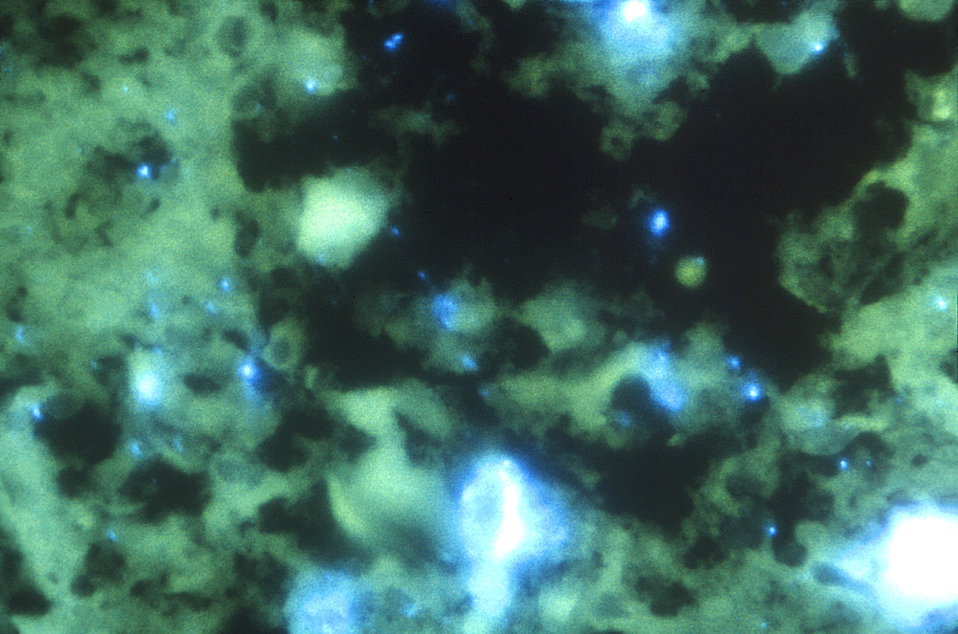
Magnified 562X, this photomicrograph, stained using the fluorescent antibody (FA) technique, revealed elements of a Zygomycetes infection within an unidentified tissue sample.